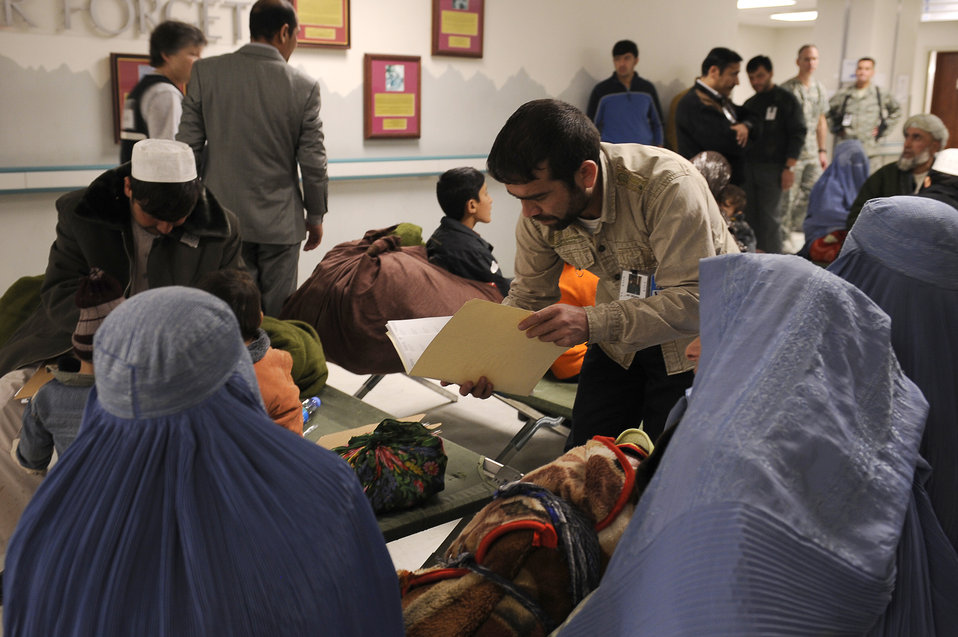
Afghan avalanches

Afghan doctors along with Airmen from the 455th Expeditionary Medical Group assess avalanche survivors who were medically evacuated to Craig Joint Theater Hospital Feb. 9, 2010, at Bagram Airfield, Afghanistan. Dozens of Afghans were taken to Bagram Airfield after avalanches struck a mountain pass in the Parwan Province.